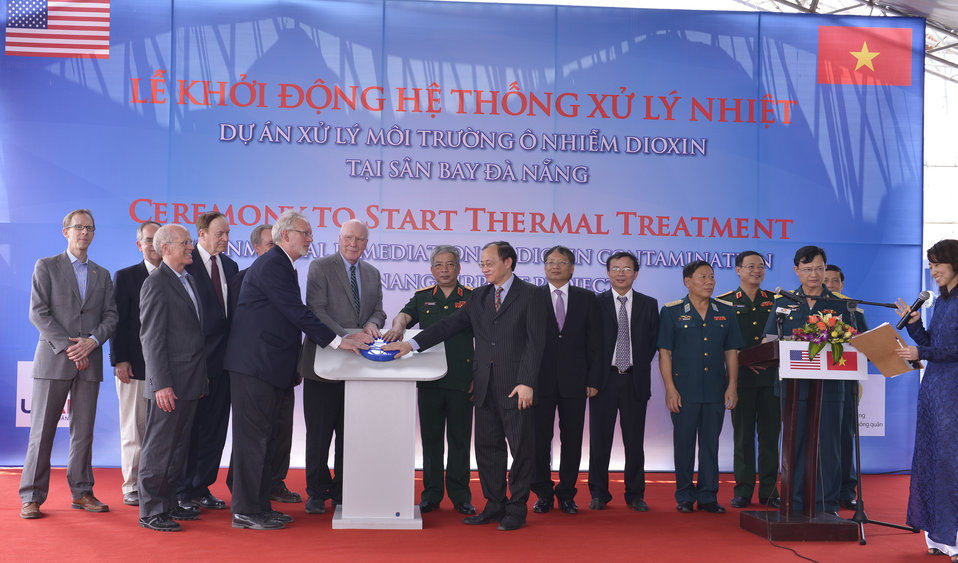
Senator Leahy, Senior Lieutenant General Nguyen Chi Vinh, Vietnam’s Vice Minister of National Defense, U.S. Ambassador David Shear and Vice Chairman of Vietnam’s National Assembly’s Foreign Relations Committee Ha Thuy Thong switched on the thermal t

Danang, April 19, 2014.